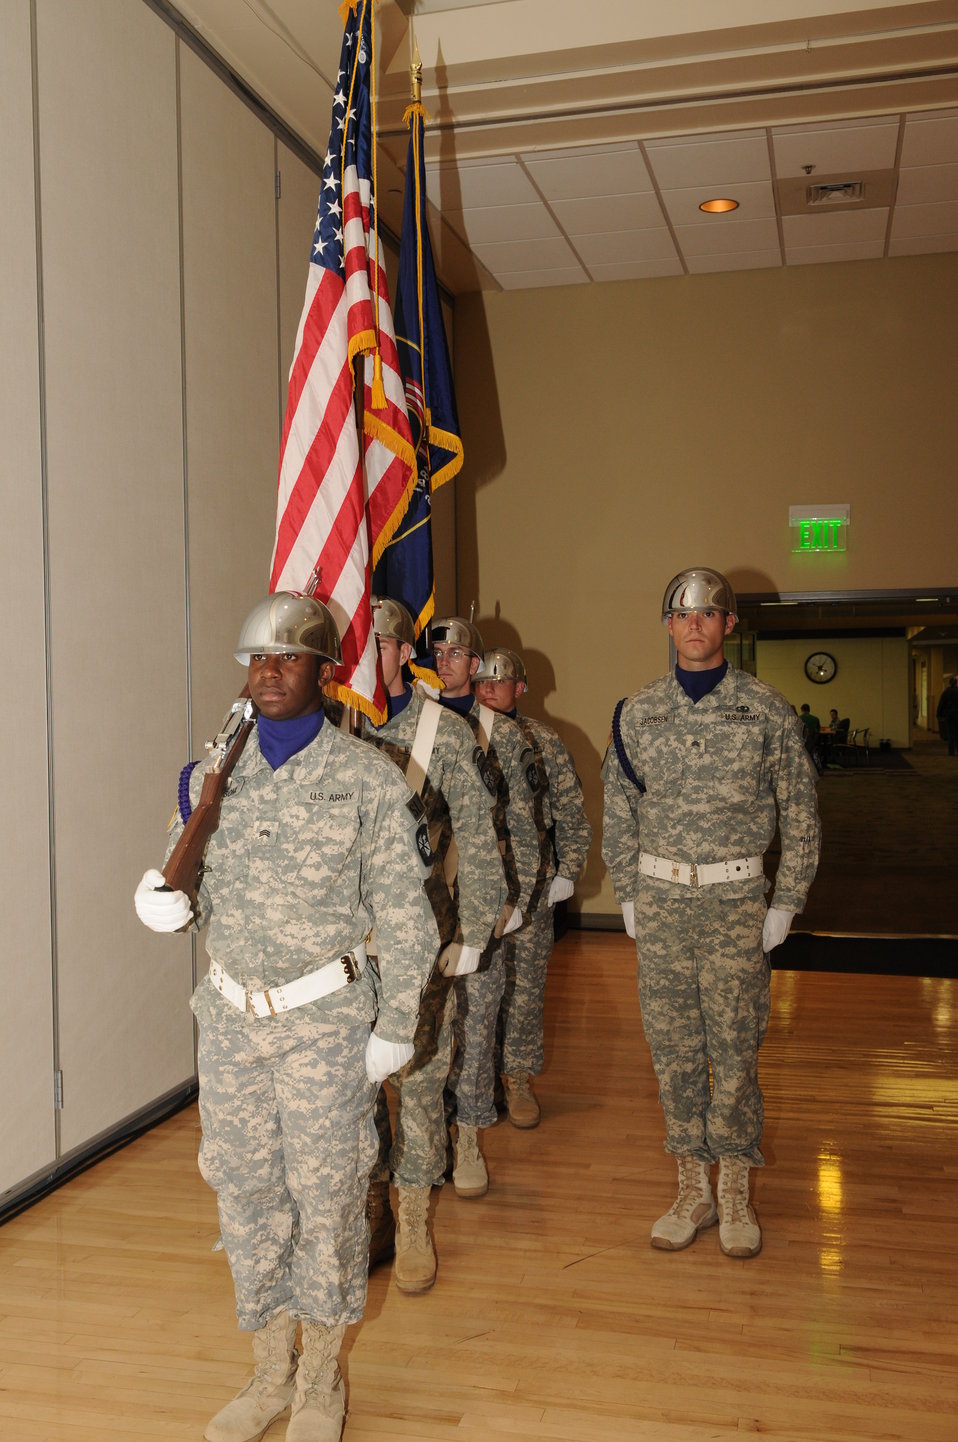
Presentation of Colors

The U.S. Fish & Wildlife Service sponsored the 2012 Federal Duck Stamp Art Contest September 28 and 29 in Ogden, Utah, at Weber State University. A panel of five judges was responsible for choosing the art work used to design the 2013-2014 Migratory Bird Hunting and Conservation Stamp.